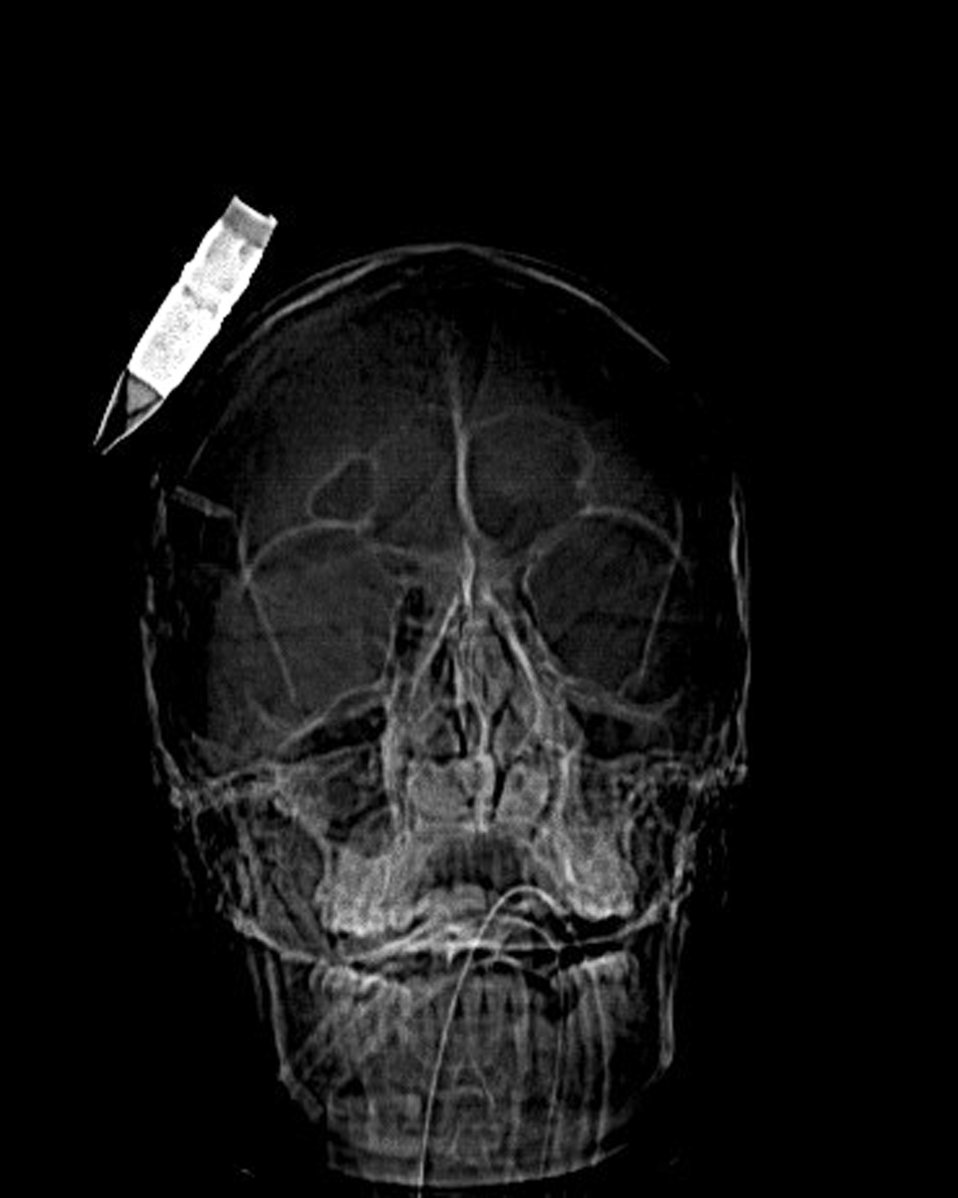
Bagram medics remove unexploded ordnance from patient

This computerized axial tomography scan image shows the placement of a 14.5 mm high explosive incendiary round that was removed from the scalp of an Afghan National Army soldier March 18, 2010, at the Craig Joint Theater Hospital at Bagram Airfield, Afghanistan. The injury was sustained during an improvised explosive device attack.